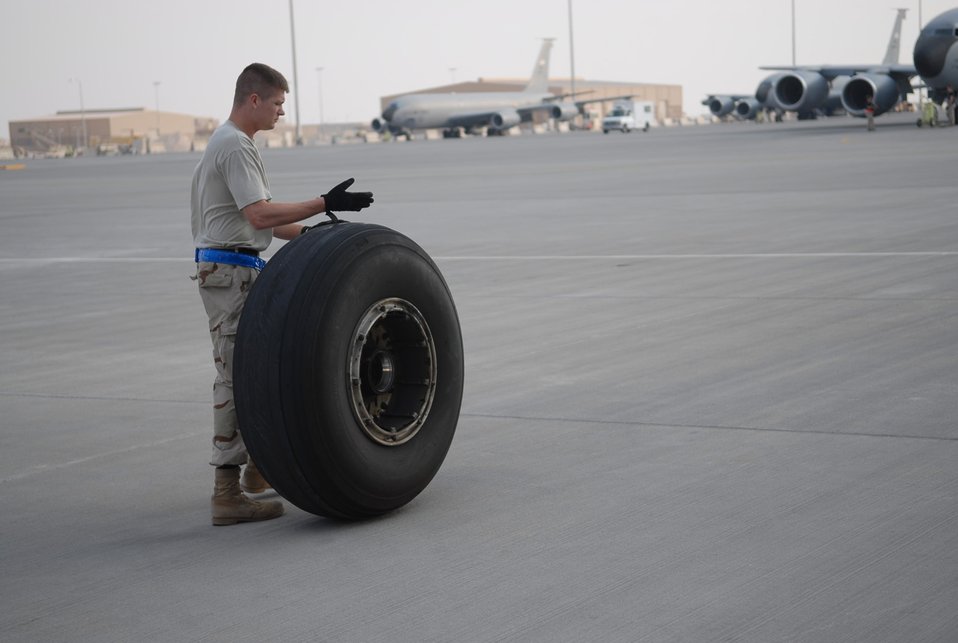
Tired

Staff Sgt. Frank Veres rolls a worn tire away from a KC-135 Stratotanker Jan. 5 at a Southwest Asia air base. Sergeant Veres, a 379th Expeditionary Aircraft Maintenance Squadron crew chief deployed from Fairchild Air Force Base, Wash., is originally from Toledo, Ohio.